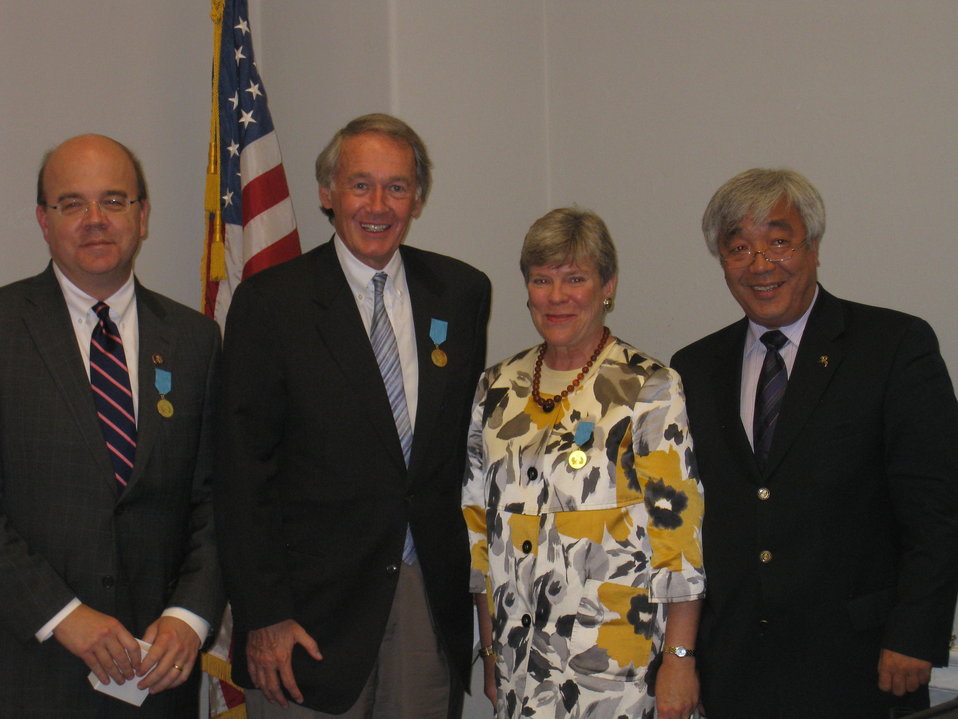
Assistant Secretary Gottemoeller meets Representatives McGovern, Markey, and Kazakh Ambassador Idrissov

U.S. Assistant Secretary of State for Arms Control, Verification and Compliance Rose Gottemoeller meets with U.S. Representative McGovern, U.S. Representative Markey, and Kazakh Ambassador to the United States Idrissov in Kazakhstan on September 8, 2011.